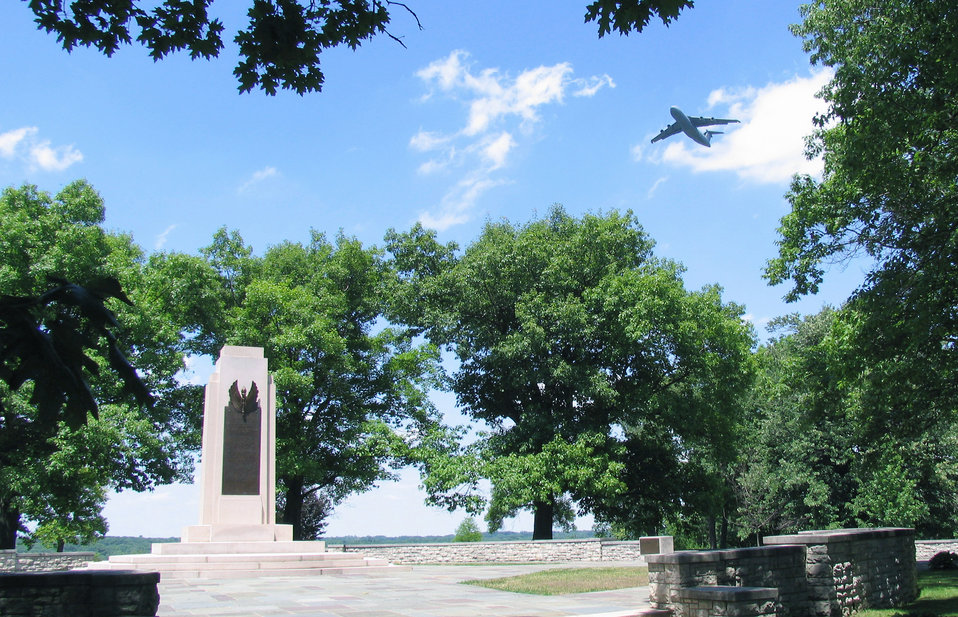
Wright Flight

A C-5 Galaxy flies over the Wright Brothers Memorial, which overlooks the main runway at Wright-Patterson Air Force Base, Ohio. Dedicated in 1940, the memorial commemorates the contributions of Dayton inventors Orville and Wilbur Wright to manned powered flight. It is now part of the Dayton Aviation Heritage National Historic Park. Air Force and Park Service officials are planning a ceremony at the memorial Dec. 17, 2010 to celebrate the Wright's first successful powered flight.